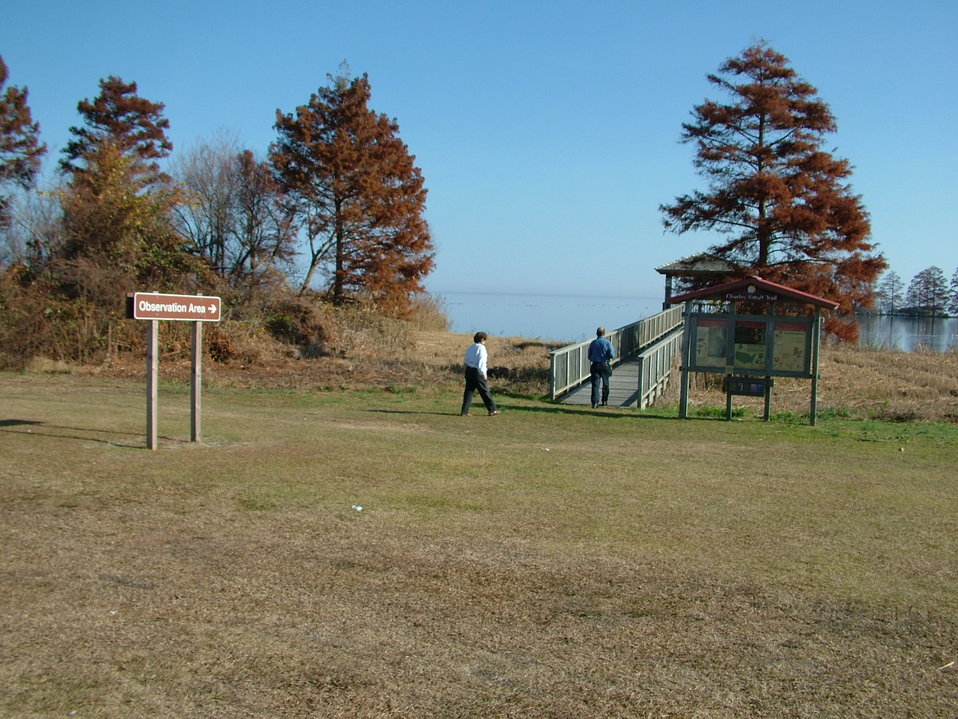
On to the Overlook!

Visitors walk to an overlook at Mattamuskeet National Wildlife Refuge.